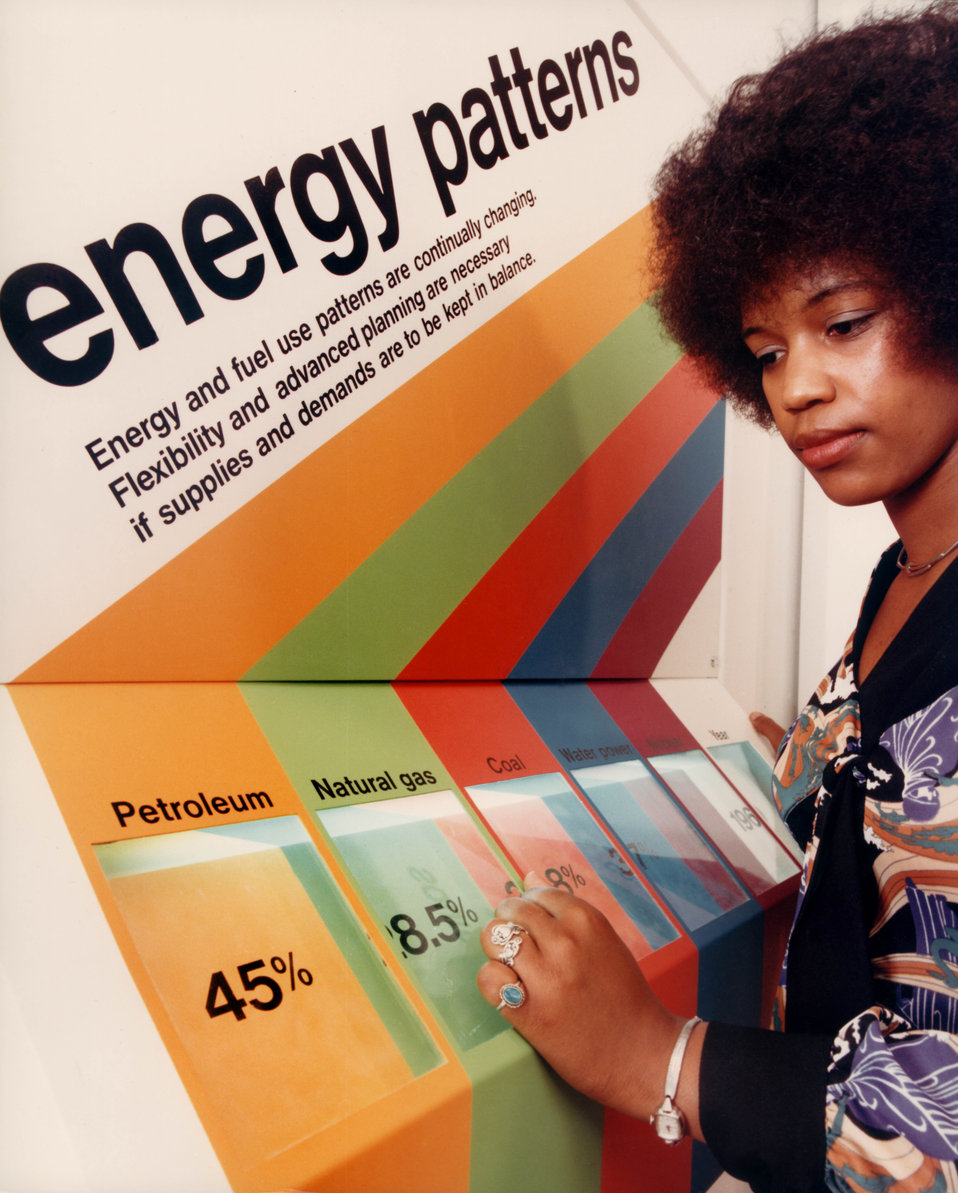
Two Energy Trailer Exhibit Downtown Oak Ridge

76-265-a DOE photo by Frank Hoffman Two Energy Trailer Exhibit Downtown Oak Ridge Tennessee 5-10-10-1976